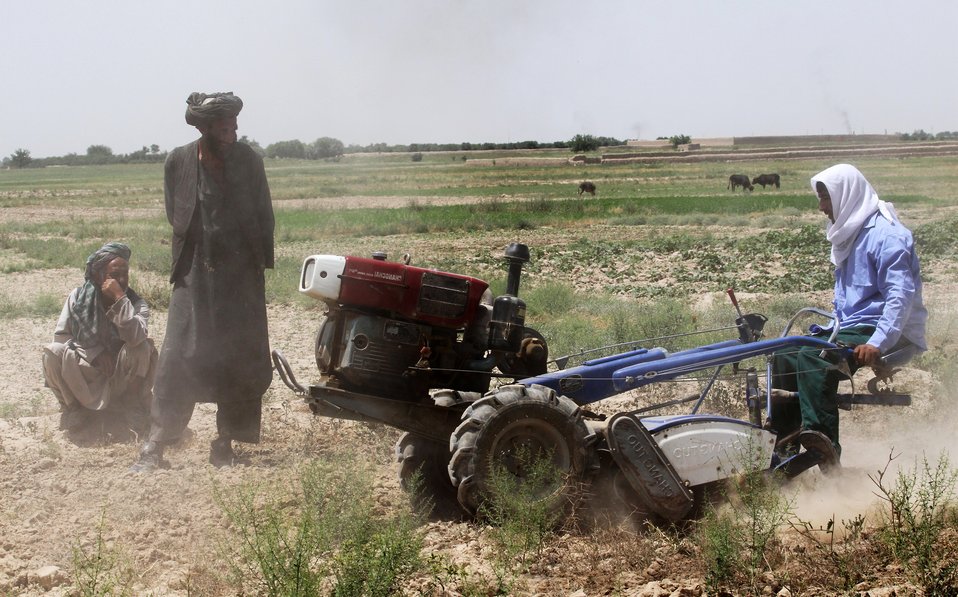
Two Wheel Tractors

Agriculture is the backbone of the Afghan economy and society. Due to limited resources, Afghan farmers use simple and traditional equipment. USAID, in partnership with the Ministry of Agriculture, Irrigation and Livestock (MAIL) is mechanizing the agriculture sector to increase agricultural productivity in Afghanistan.